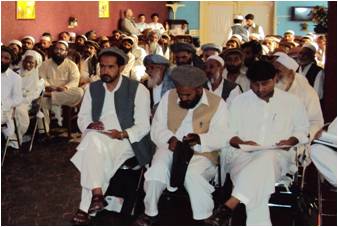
Jirgamaran Tackle Village Disputes

Long-standing land disputes spanning generations are common in Nangarhar Province. A jirgamar (elder) from Behsud recently recounted a decades-long dispute over a small piece of land situated between two area qwams (tribes). Just recently, an altercation among qwams reignited old arguments, leaving at least five people dead and 30 wounded near Jalalabad, the provincial capital of Nangarhar.

This jirgamar is one of 80 influential jirgamaran (elders) from Behsud and Sukh Rod districts invited to discuss disagreements over land and other disputes destabilizing their communities. The elders’ meeting was a first, organized by USAID’s Rule of Law Stabilization Program—Informal Component, to build a network among elders serving traditional justice roles in Nangarhar. The program supports community-based dispute resolution, linking both traditional and state justice sectors to build capacity and strengthen the rule of law in Afghanistan.

“These sessions create relations between jirgamaran,” said elder Mawlawi Tawakal through a translator. “Through these relationships, we can resolve disputes that are taking a long time to resolve inside villages by ourselves.” Tawakal is also a member of the Behsud district Independent Directorate of Local Governance shura.

The meeting began with jirgamaran discussing their villages’ community-based dispute resolution process. Spin-geree, Pashto for “white beards,” compared various ways they record jirgas’ decisions, and how these are shared with state justice offices. The jirgamaran agreed that meetings should include standardizing forms that can be registered with courts, helping to establish links to the formal justice sector.

“These meetings build links between tribes,” Mohammad Arif, a jirgamar from Behsud district, said. “Discussions identify problems and strengthen relations between the formal justice system and jirga members.”

USAID will sponsor a similar meeting for women jirgamaran in Jalalabad in mid-September. The women’s meeting will focus on strengthening women’s roles in the community-based dispute resolution process.